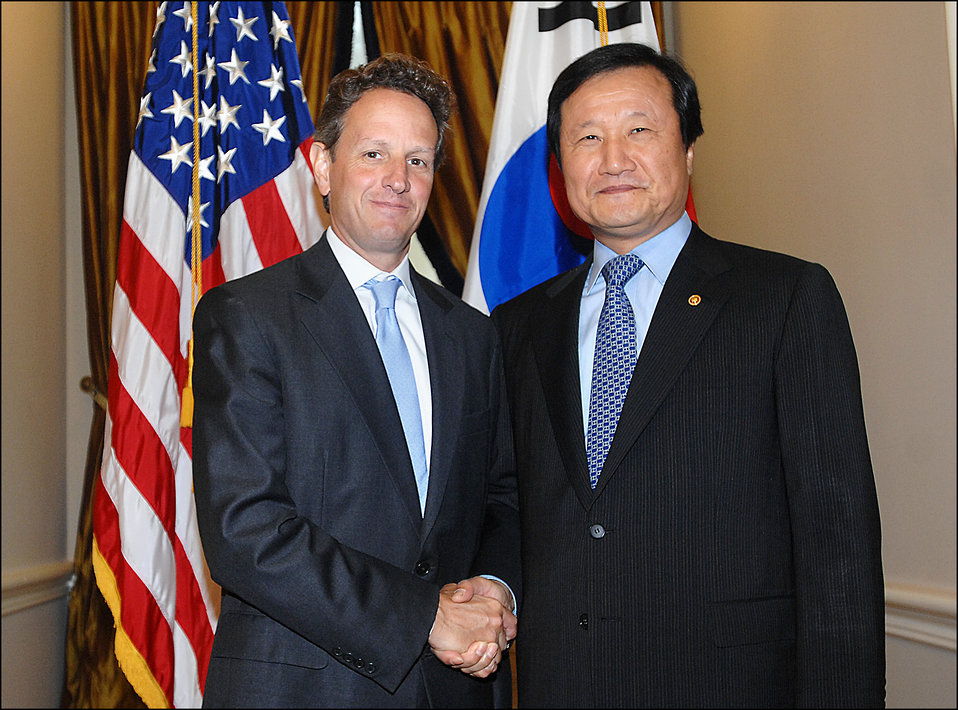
Korean Finance Minister Yoon, 09/27/2010

On Monday, September 27, 2010, Secretary Geithner met with Korean Minister of Strategy and Finance Yoon Jeung-Hyun at Treasury.